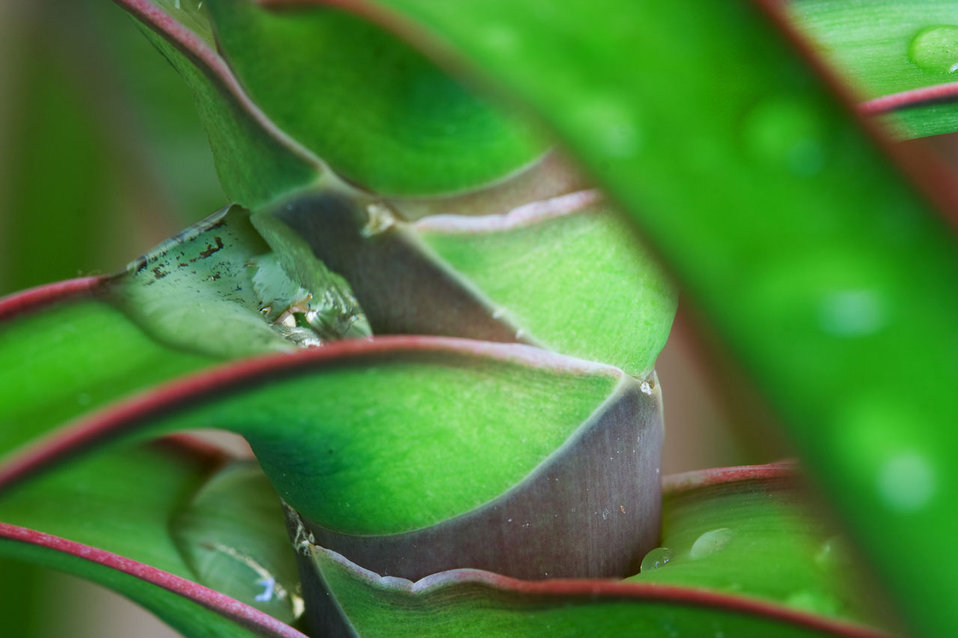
Drop

Water on the plant.